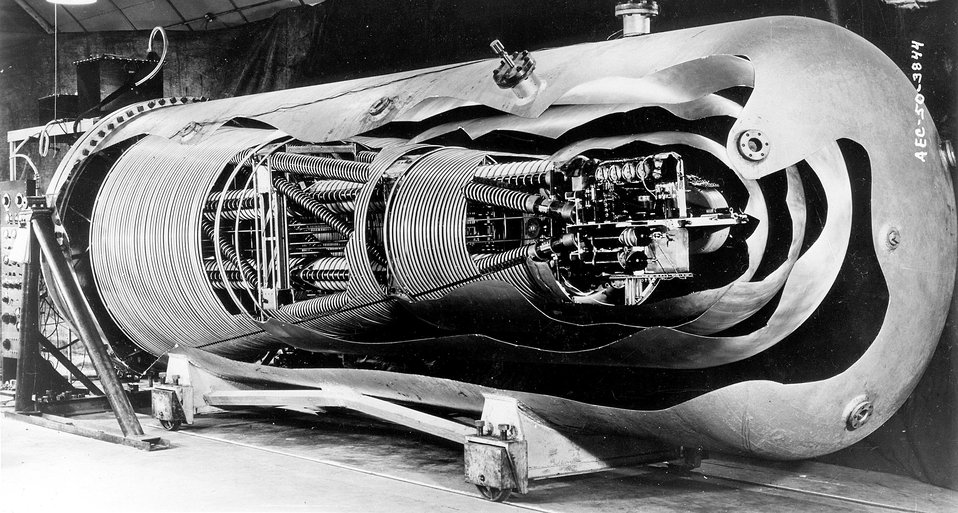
5-million volt Argonne Van de Graaff electrostatic generator which can give ions nine-tenths the velocity of light.
c.1950